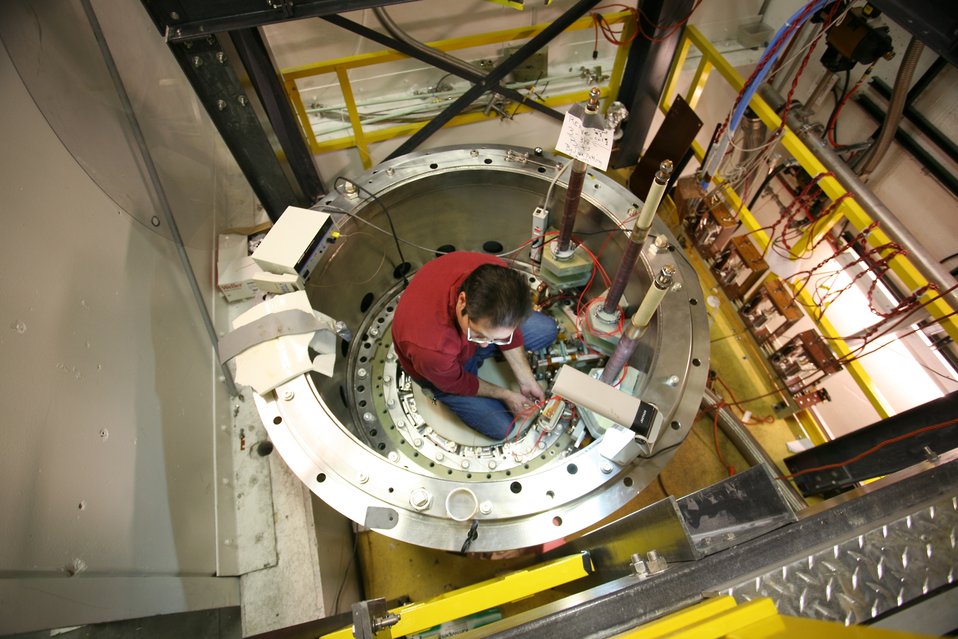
THE 100-TESLA MULTI-SHOT MAGNET, BEING ASSEMBLED BY MIKE PACHECO, IS THE FLAGSHIP OF THE NATIONAL HIGH MAGNETIC FIELD LABORATORY PULSED FIELD FACILITY.

Powerful magnets-some the most powerful in the world-are available to researchers visiting the National High Magnetic Field Laboratory's Pulsed Field Facility. Located high on a mesa at Los Alamos National Laboratory, the NHMFL-PFF is the only pulsed high field user facility in the country as well as the center of exceptional condensed matter physics research.